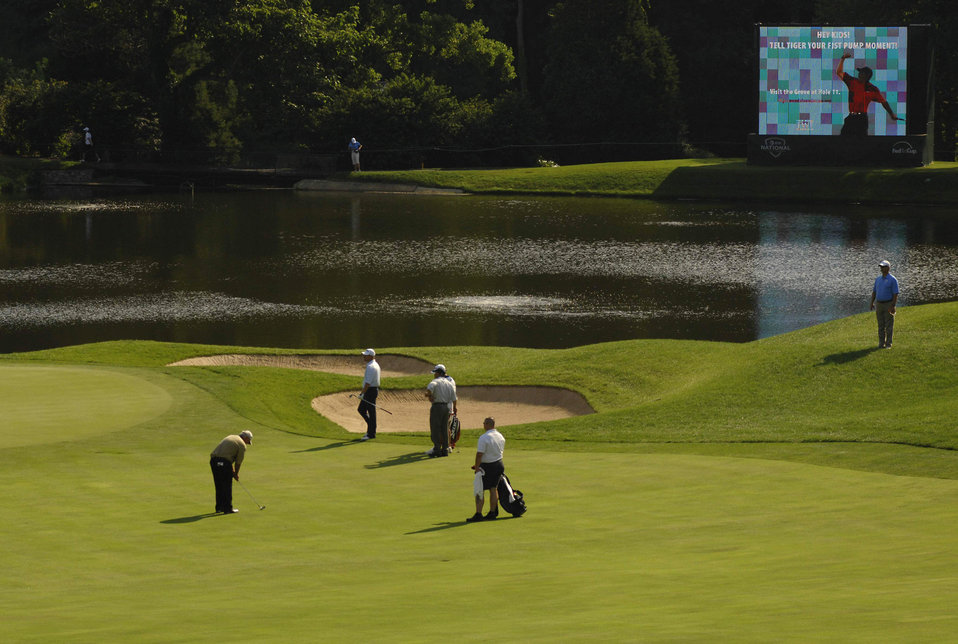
Andrews Airman participates in national golf tournament

The Tiger Woods Foundation selected Senior Master Sgt. Kirk Kessler to play in the 2nd Annual AT&T National Golf Tournament July 2 at the Congressional Country Club in Bethesda, Md. Sergeant Kessler is assigned to the 316th Civil Engineer Squadron from Andrews Air Force Base, Md.